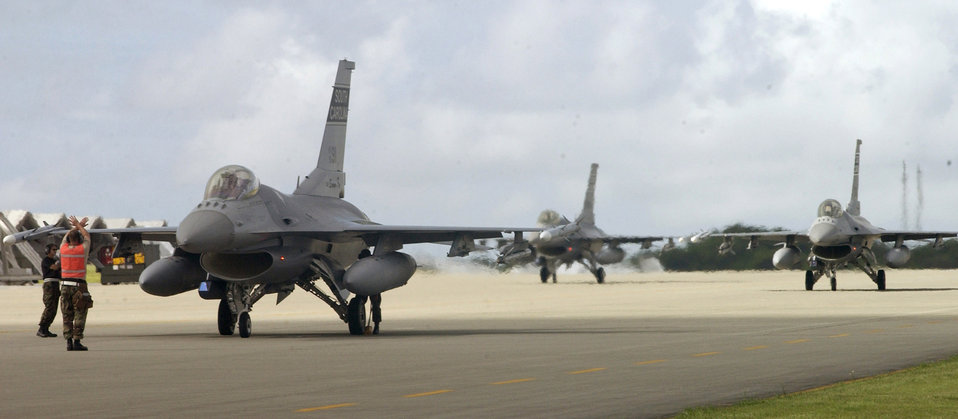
South Carolina Air Guard trains at Kadena

F-16 Fighting Falcons assigned to the South Carolina Air National Guard's 157th Fighter Squadron taxi in at Kadena Air Base, Japan, after a mission Sept. 11. Twelve aircraft and more than 300 Airmen from the squadron are deployed to Kadena for theater orientation training.